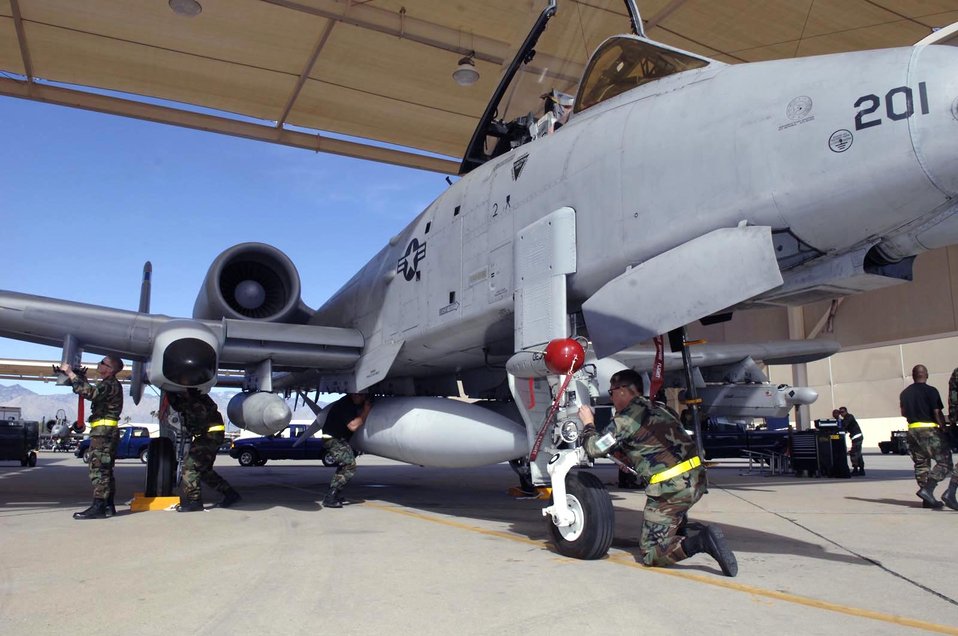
We're ready!

Airmen from the 355th Maintenance Group prepare an A-10 Thunderbolt II for launch Feb. 17 during an operational readiness exercise at Davis-Monthan Air Force Base, Ariz., being conducted by the Air Combat Command inspection team. The ACC inspectors test the ability of 355th Wing Airmen to prepare to deploy and fight when called.